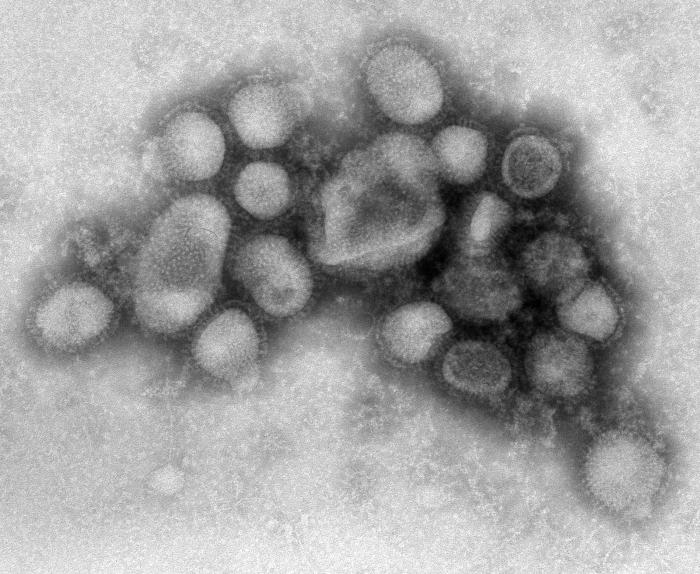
This negative stained transmission electron micrograph (TEM) depicted some of the ultrastructural morphology of the A/CA/4/09 swine flu virus. See PHIL 11215 for a colorized version of this image.What is Swine Influenza?